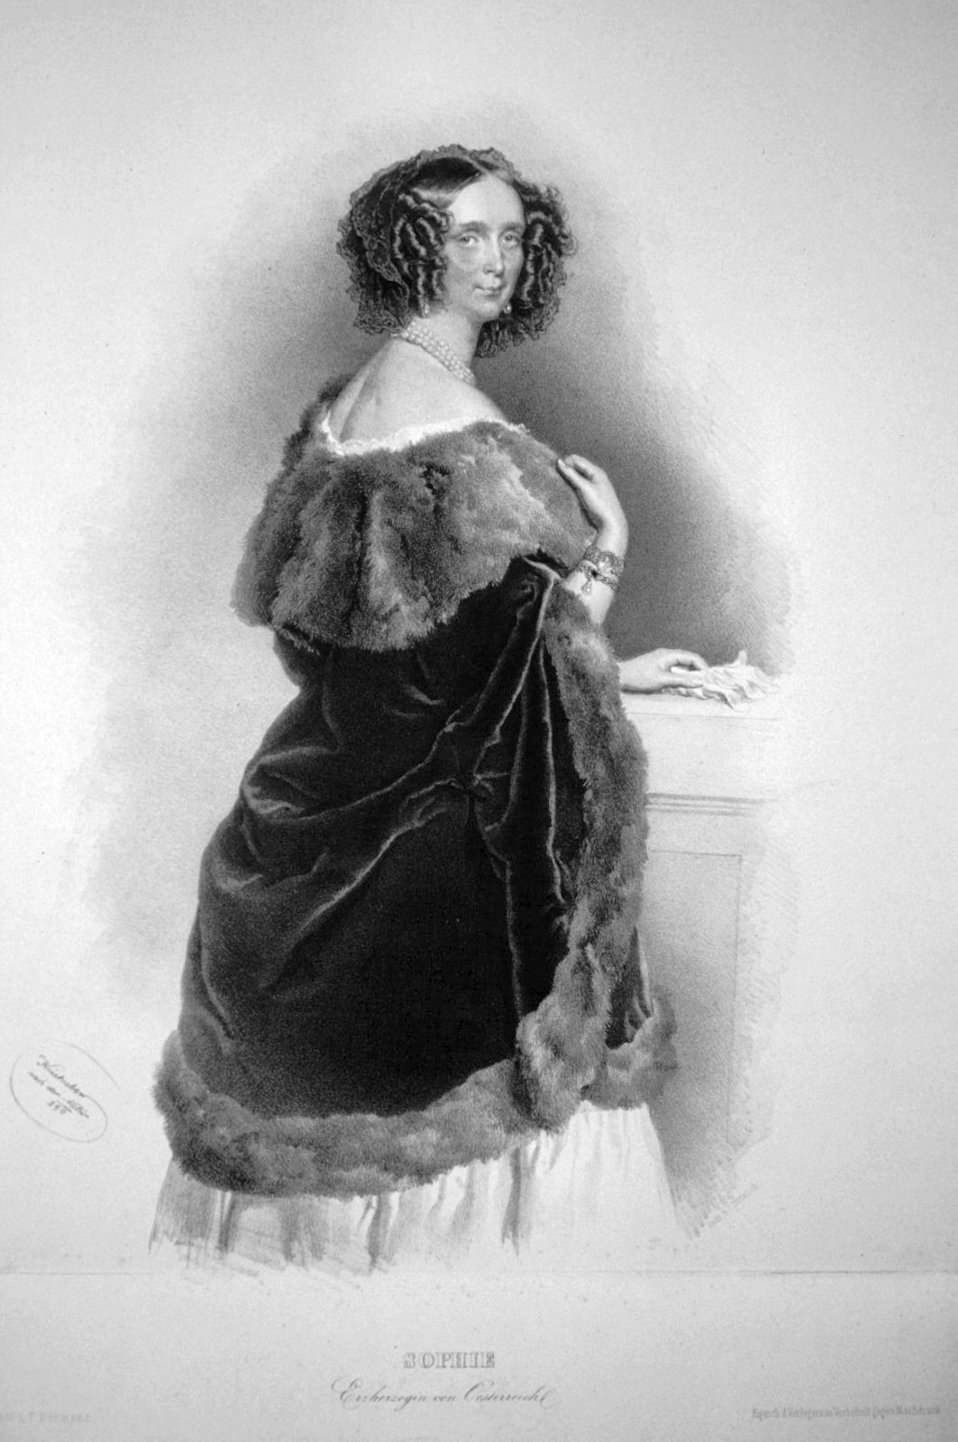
Erzherzogin Sophie Litho